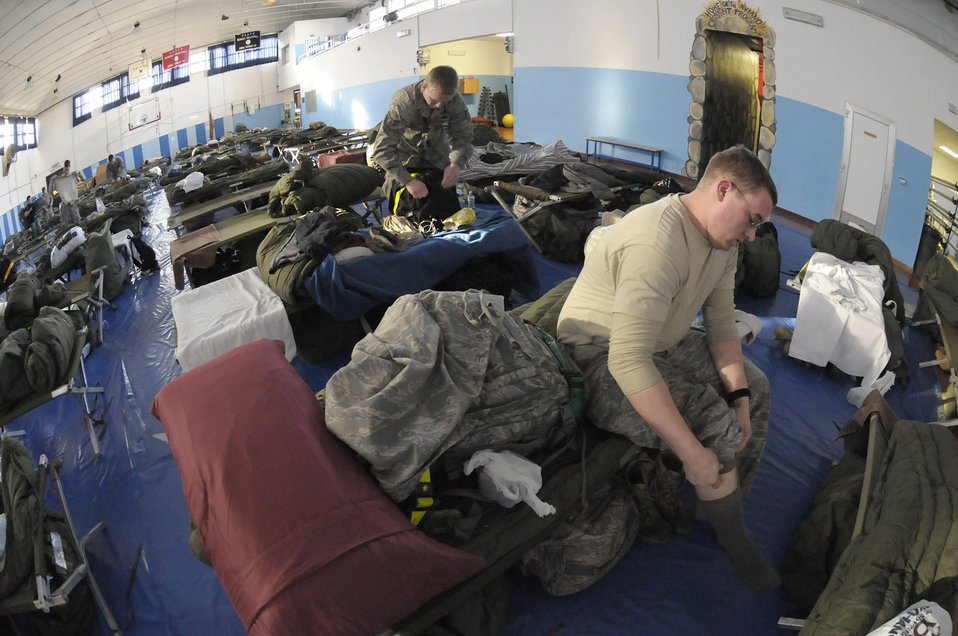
Airmen deploy to Aviano

Deployed Airmen prepare for work March 22, 2011, while residing in temporary quarters at Aviano Air Force Base, Italy.